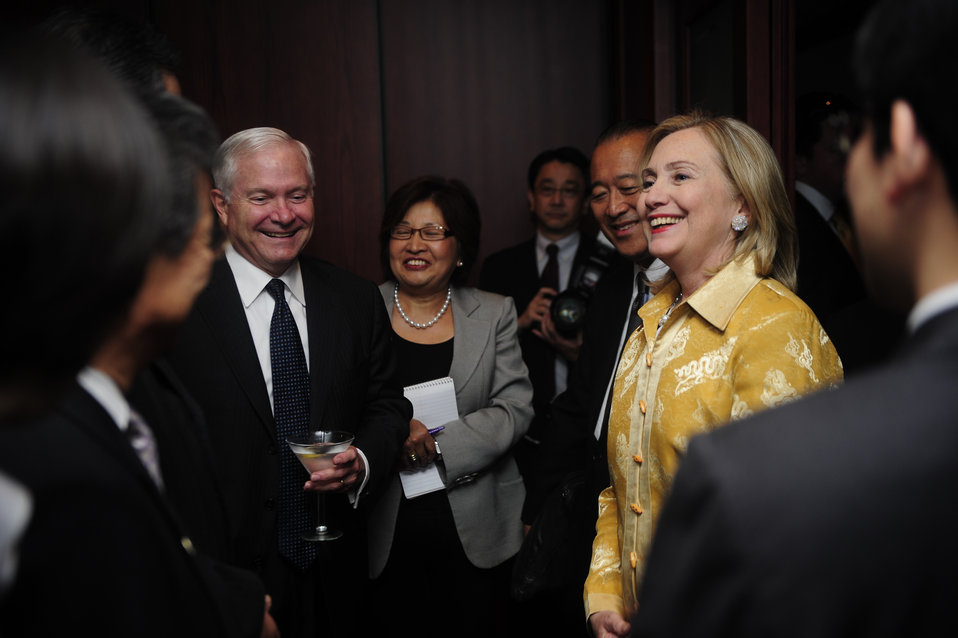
Secretary Clinton Speaks With Secretary Gates and Japense Ministers Matsumoto and Kitazawa

U.S. Secretary of State Hillary Rodham Clinton drops by a dinner hosted by U.S. Secretary of Defense Robert Gates in honor of Japanese Foreign Minister Matsumoto and Japanese Defense Minister Kitazawa in Crystal City, Virginia, on June 20, 2011.